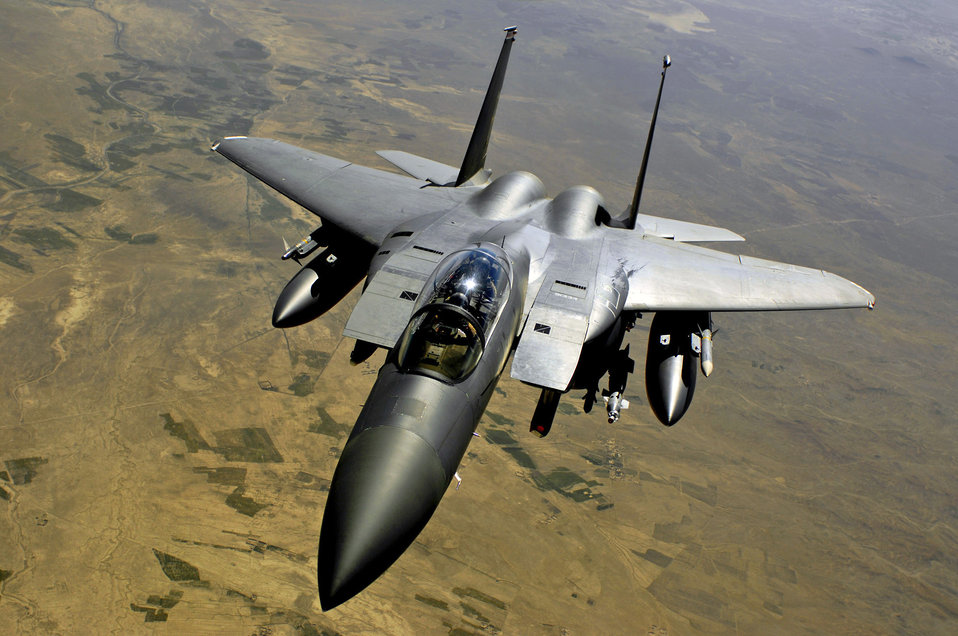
Sept. 14 airpower summary: F-15Es provide aerial surveillance

An Air Force F-15E Strike Eagle aircraft returns to the fight after receiving fuel during a mission over Afghanistan. F-15Es provide armed aerial surveillance in support of Operation Enduring Freedom.